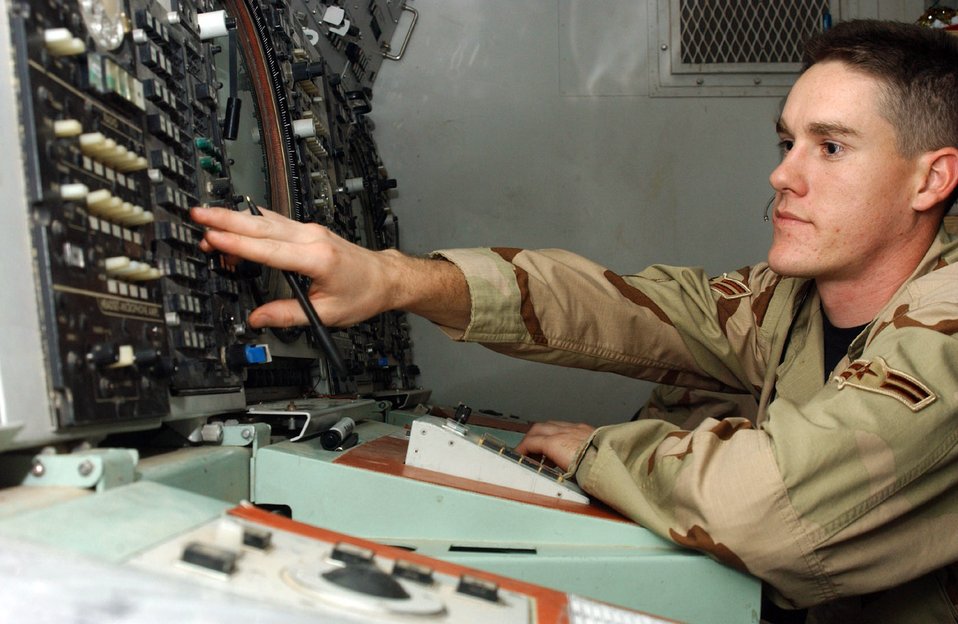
Controlling the skies

ALI BASE, Iraq (AFPN) -- Air traffic controllers Airman 1st Class Grant Gers -- monitoring radio traffic -- is one of the Airmen who helps monitor air traffic over Iraq. A small group of Airmen from the 407th Expeditionary Operations Support Squadron's Area Control Center control the southern third of Iraqi skies. The Airmen use a highly mobile radar unit to cover the 50,000 square miles.